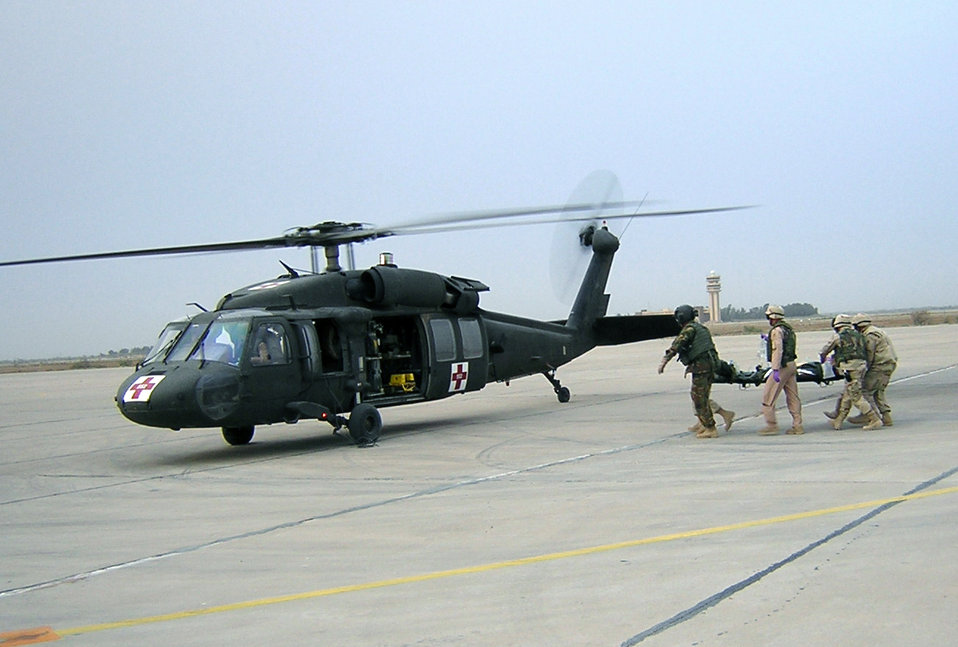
Multifaceted care

CAMP SATHER, Iraq -- Medical technicians from the 447th Expeditionary Medical Squadron here load up patients during a scheduled aeromedical evacuation. Many of the aeromedical evacuations from here occur at night, requiring a high degree of competence and teamwork from the technicians to prevent further injury or pain to the patients.